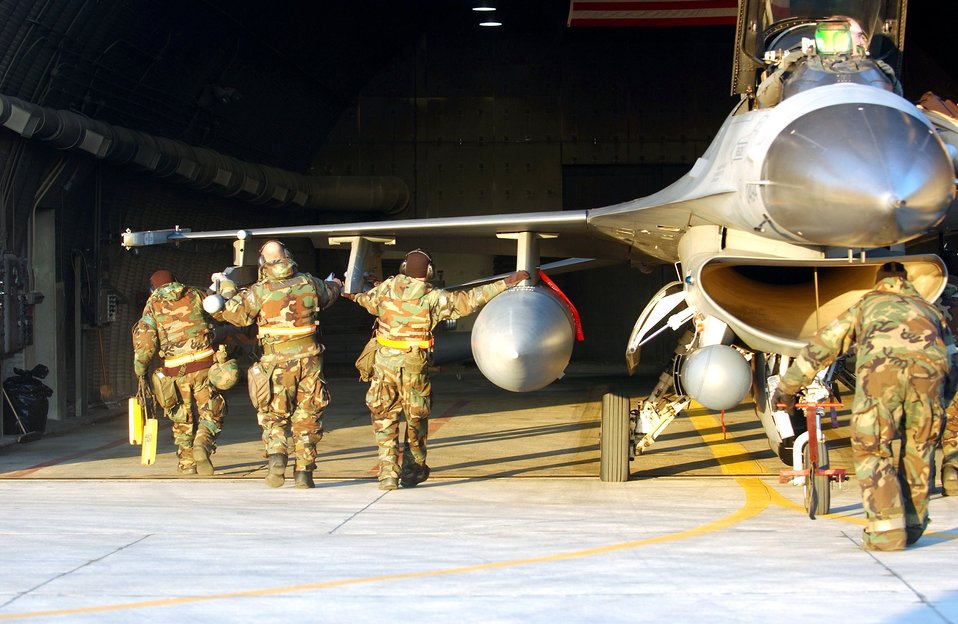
Beverly Bulldog 06-01

OSAN AIR BASE, South Korea (AFPN) -- Members of the 51st Maintenance Squadron push an F-16 Fighting Falcon back into a hangar after a mission supporting exercise Beverly Bulldog 06-01 here Jan. 24. Exercise scenarios test the base's ability to protect its operations from missile attacks or enemy forces.